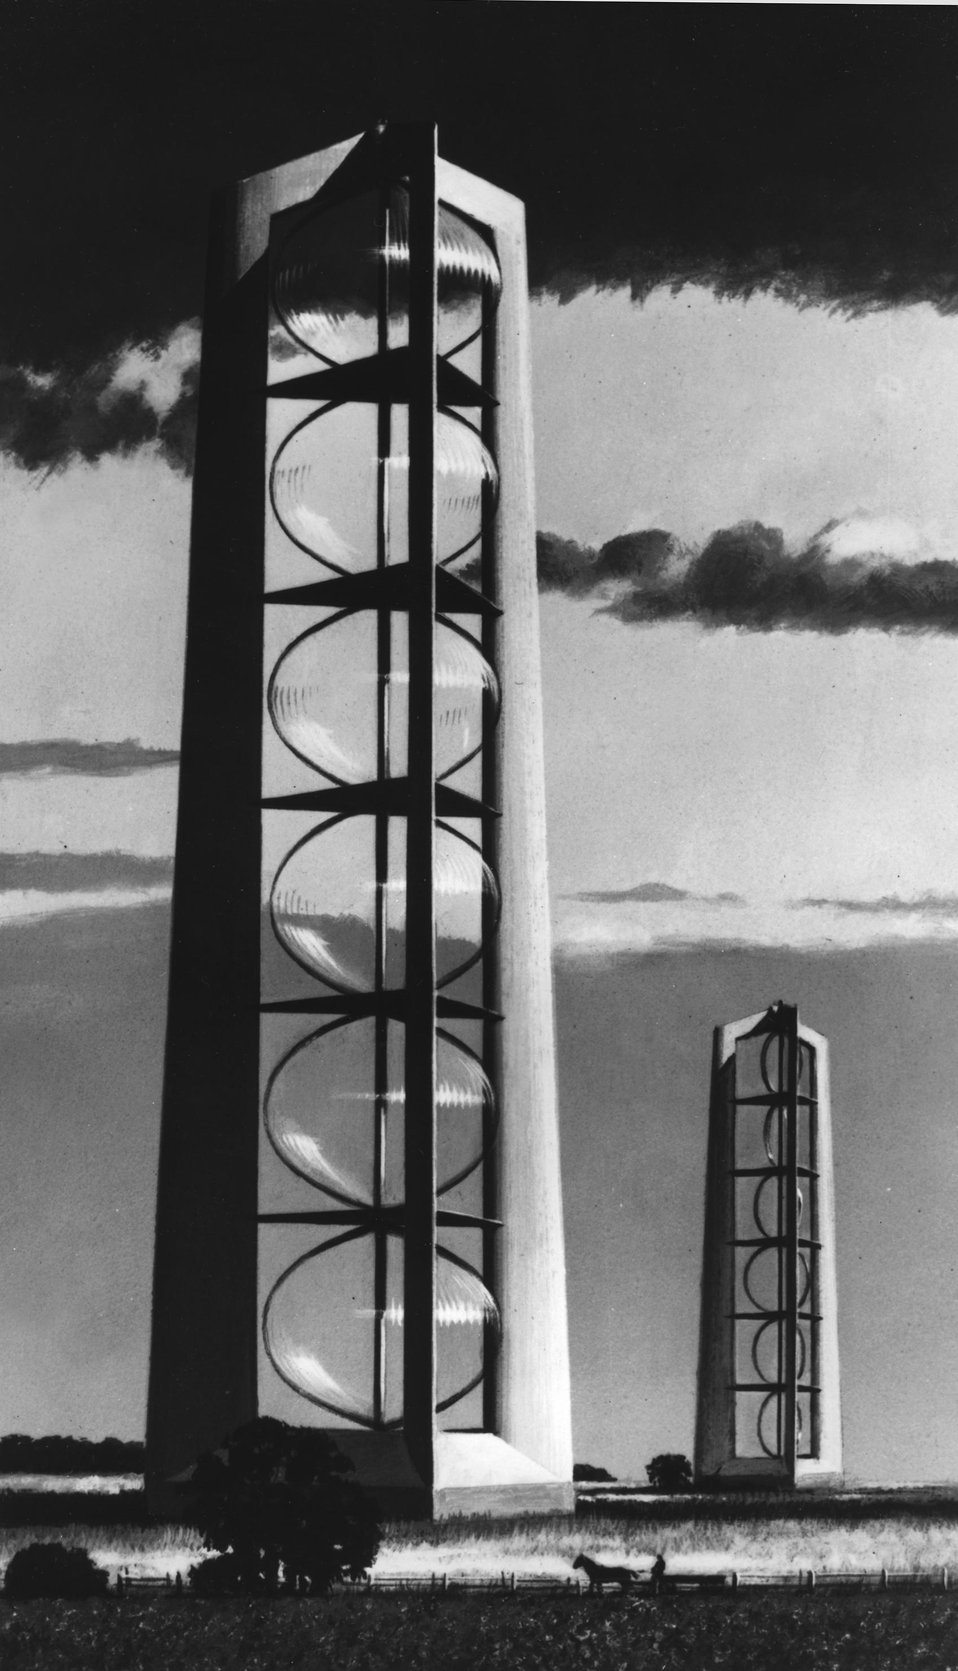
Nothing in the books says a windmill has to look like a windmill -- but that it must have a set of blades, something to kick them into action, and a hub to transmit the energy. c. undated